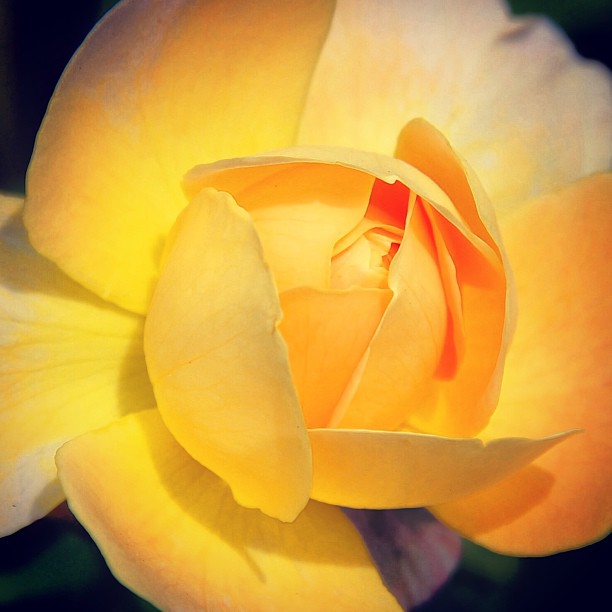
National flower blooming at National Garden at US Botanic Garden. #sustainable #rose